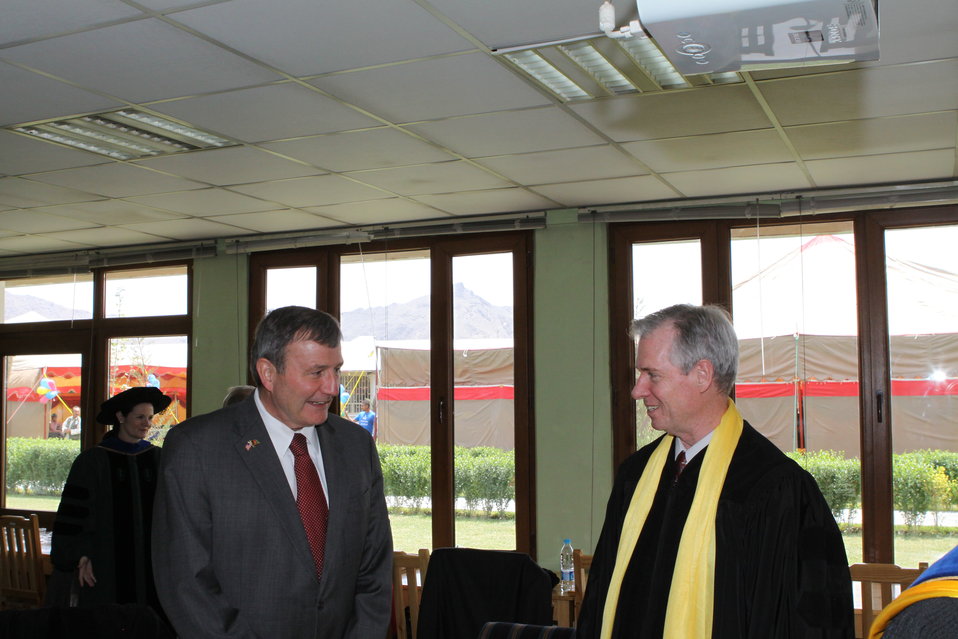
100526 AUAF Graduation 041